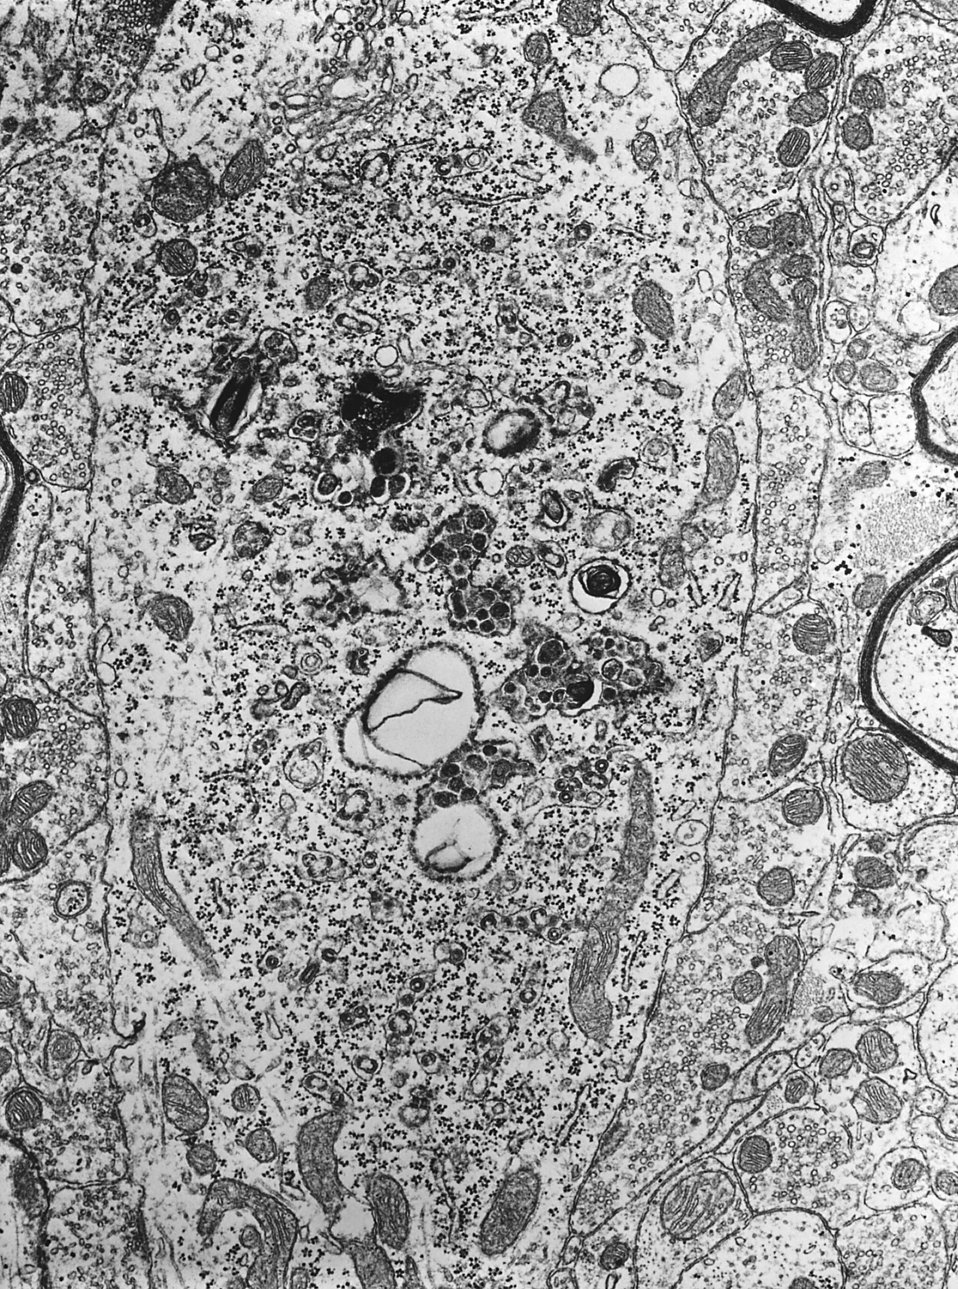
This negatively-stained transmission electron micrograph (TEM) revealed the presence of numerous intracellular Group C RNA tumor virus particles, which were present inside this central nervous system tissue specimen.